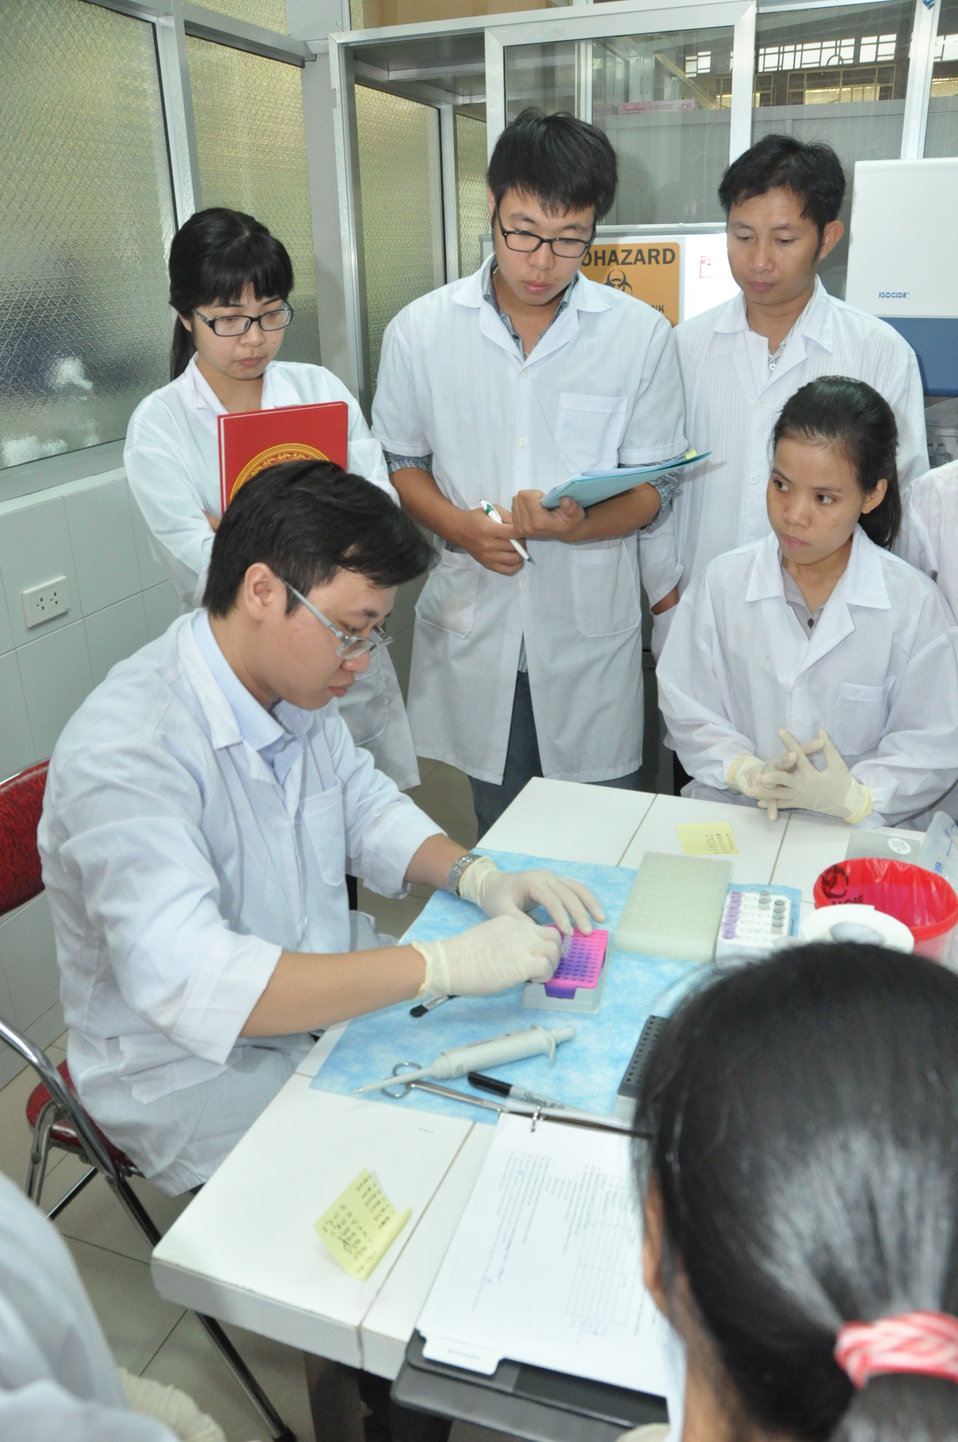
Animal virus detection lab training in Hanoi

Trainee learns how to detect viruses in Hanoi a under USAID program.